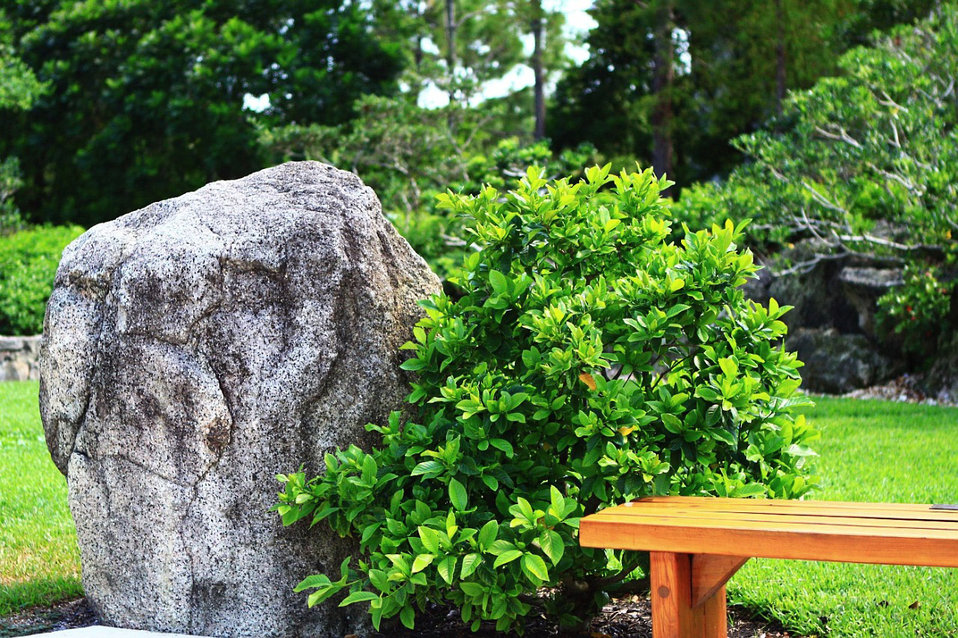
The rock

In morikami gardens.